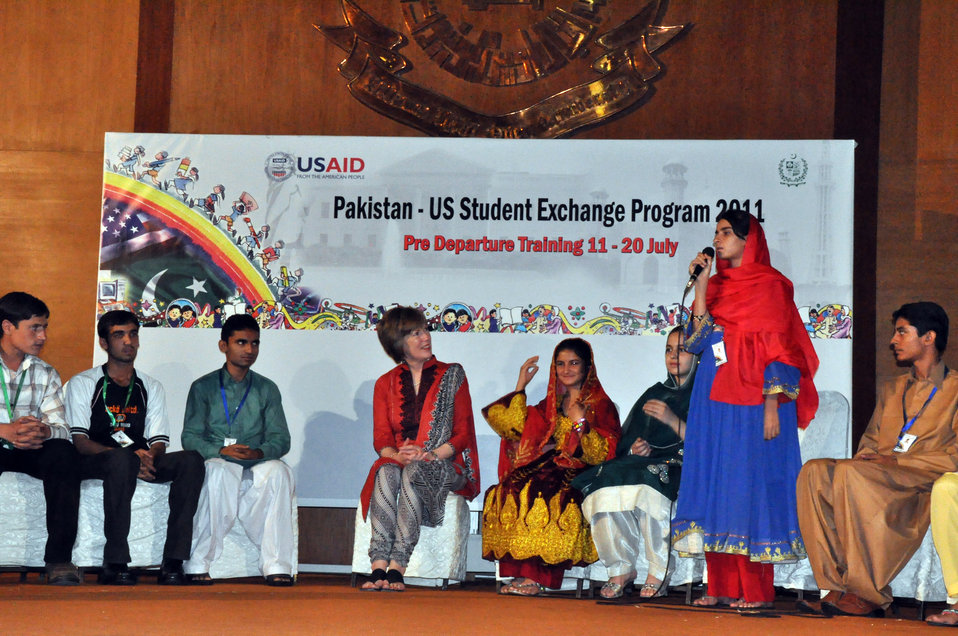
Pakistan-U.S. Student Exchange Program 2011

July 20, 2011: Dr. Marilyn Wyatt, Wife of U.S. Ambassador Cameron Munter discussed with a group of 43 students from all over the country the similarities and differences between the Pakistani and American cultures.

“Our two countries are literally half way across the world from each other,” said Dr. Wyatt during the discussion. “We have very different cultures, languages, and even food. However, we also are very similar: we love our countries, our families, and we are all working to make this world a better place.”

The 43 boys and girls from USAID-supported schools in Balochistan, FATA, and Sindh were participating in a ten-day training workshop organized by the USAID ED-LINKS program at the Allama Iqbal Open University Campus in Islamabad. During this program, 15 to 21 year old students explored cultural commonalities between Pakistan and American culture and values, such as folk music, clothing, food, and history. The program included visits to museums and other cultural sites around Islamabad, as well as a variety of research projects. Students prepared skits based on their learning.